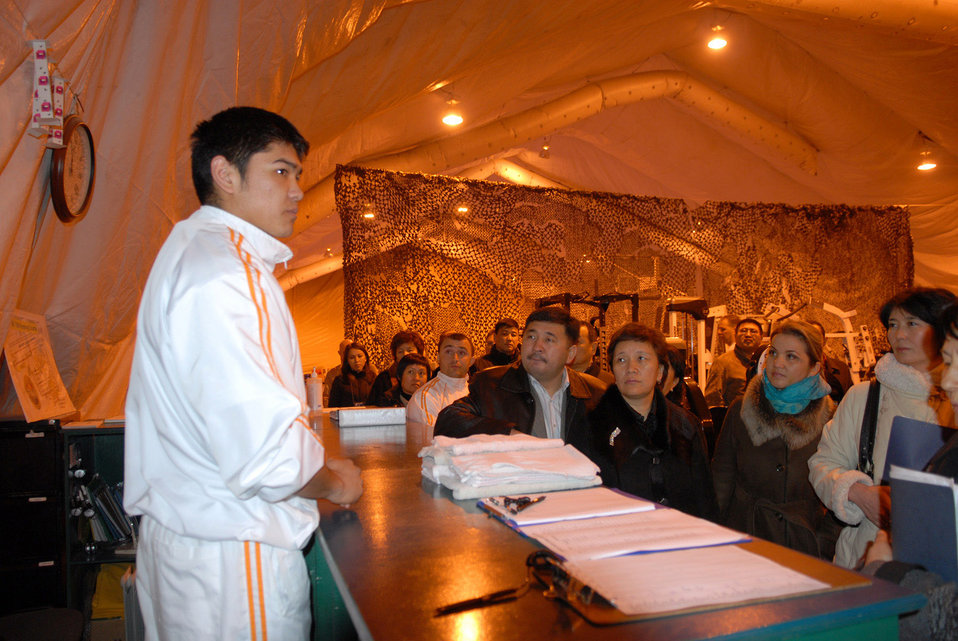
Kyrgyzstan parliament members visit Manas

Timur Seidaliev explains his duties and experiences as a Kyrgyz employee on base to members of the Kyrgyz parliament during a Dec. 15 visit to Manas Air Base, Kyrgyzstan. Mr. Seidaliev is the fitness center event coordinator.